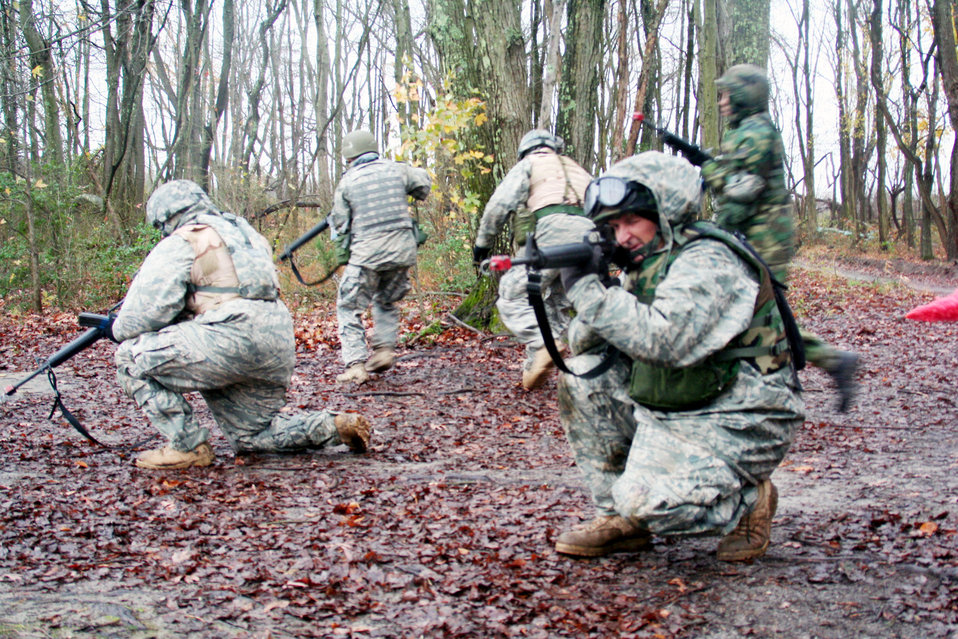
Deploying Airmen practice patrol tactics

Students in the Combat Airman Skills Training Course 10-1A practice field tactics while on patrol at a range on Joint Base McGuire-Dix-Lakehurst, N.J., Nov. 12, 2009. Airmen from the 421st Combat Training Squadron teach the course to prepare Airmen for upcoming deployments. The squadron is assigned to the U.S. Air Force Expeditionary Center.